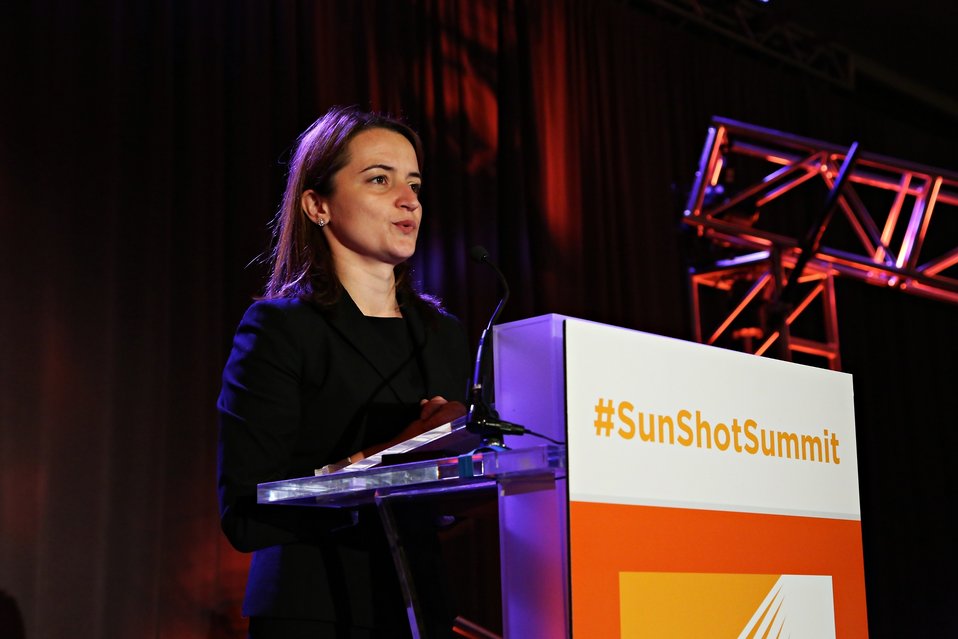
Keynote Session 6

Lidija Sekaric, SunShot's Technology to Market Program Manager giving a keynote address.